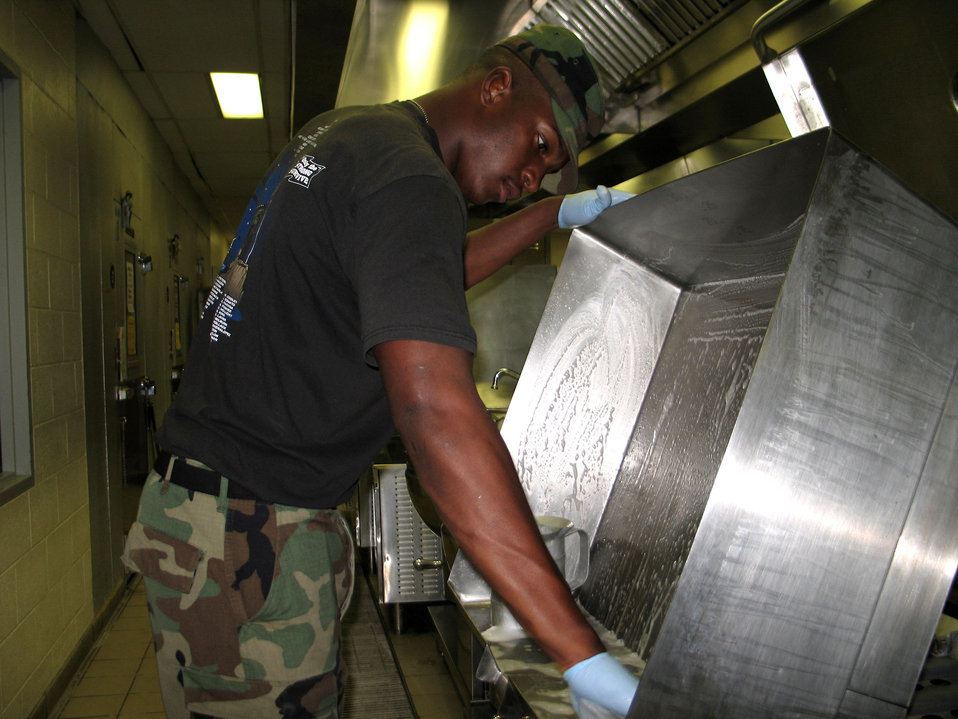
Hurricane Rita

050927-F-1415J-001
ELLINGTON FIELD, Texas -- Airman 1st Class Ilias Simpson washes dishes after serving lunch to permanent party and deployed servicemembers here. He is with the 136th Services Flight that arrived here Sept. 24 from Fort Worth, Texas, to help out with hurricane-relief efforts.